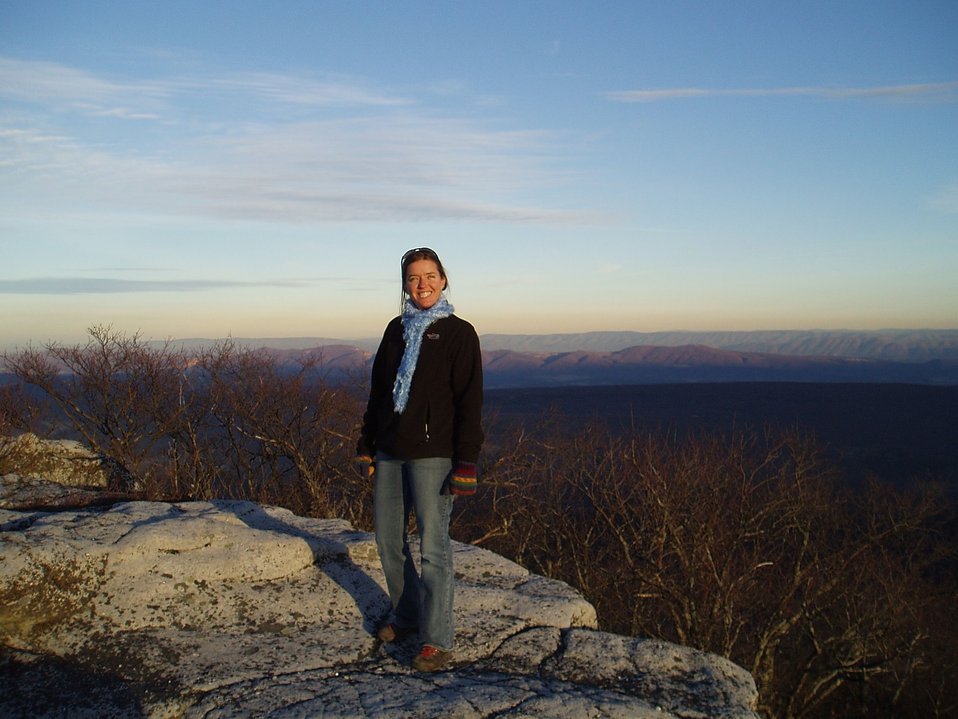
Erin Holmes in West Virginia

Erin Holmes, manager of Tualatin River National Wildlife Refuge in Oregon, credits her mom for instilling in her an early love of nature.